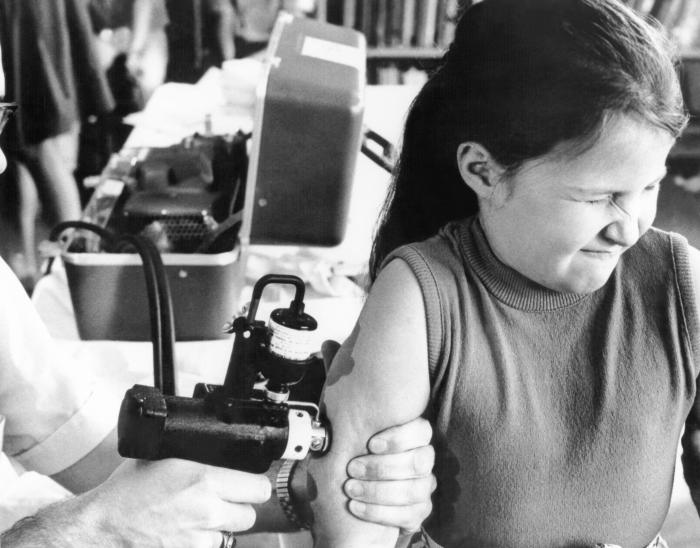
This child is receiving a Jet-Injector� gun injection during an immunization campaign.